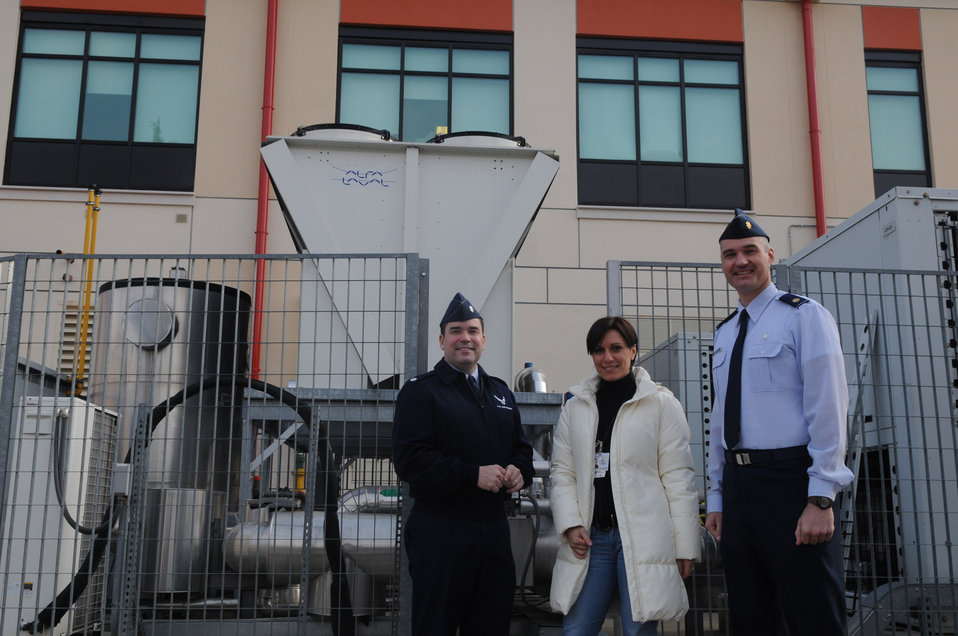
Energy Star Award

Lt. Col. John Savage, 31st Medical Support Squadron commander; Manuela Solda, 31st MDSS facility manager; and Maj. James Robertson, 31st MDSS medical logistics flight commander, stand in front of some of the equipment that earned the base hospital at Aviano Air Base, Italy, ENERGY STAR recognition. The hospital is the first U.S. facility overseas to receive the distinction.